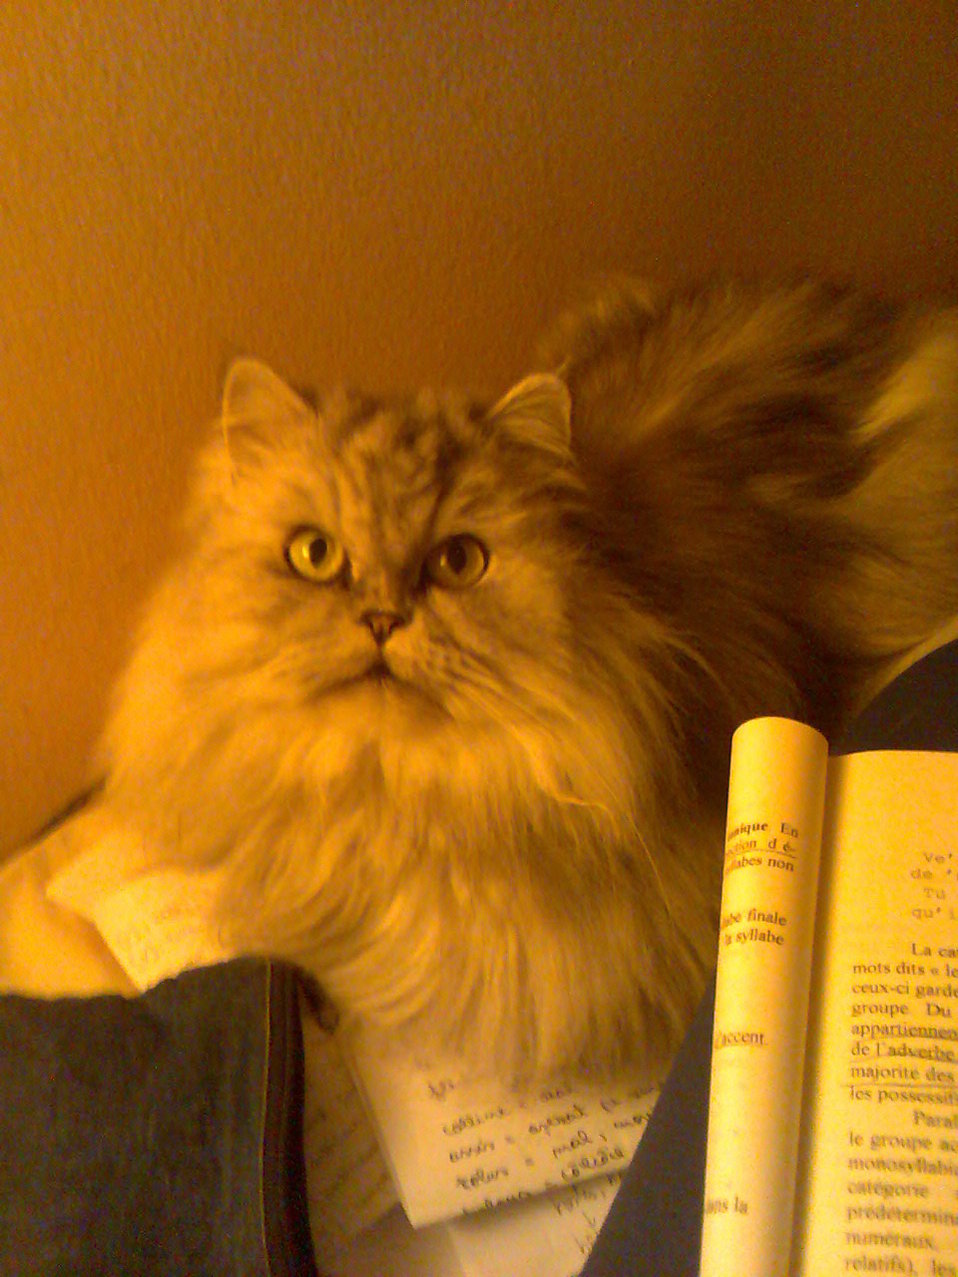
Română: Pisica persană Babushka.